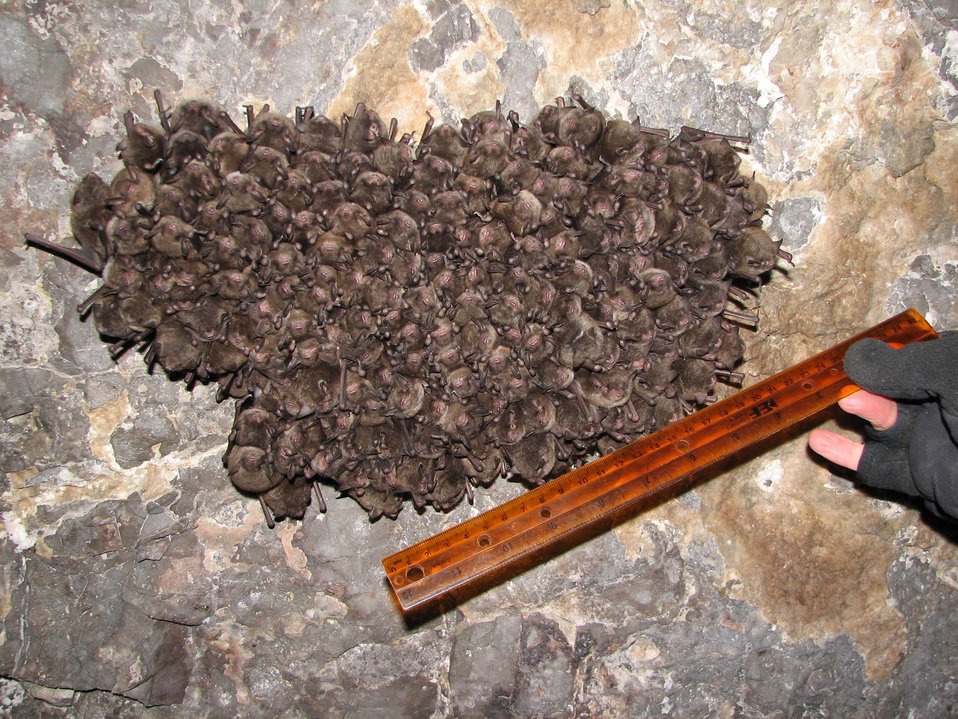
Indiana bats during a 2007 survey.

Credit: USFWS; Andrew King